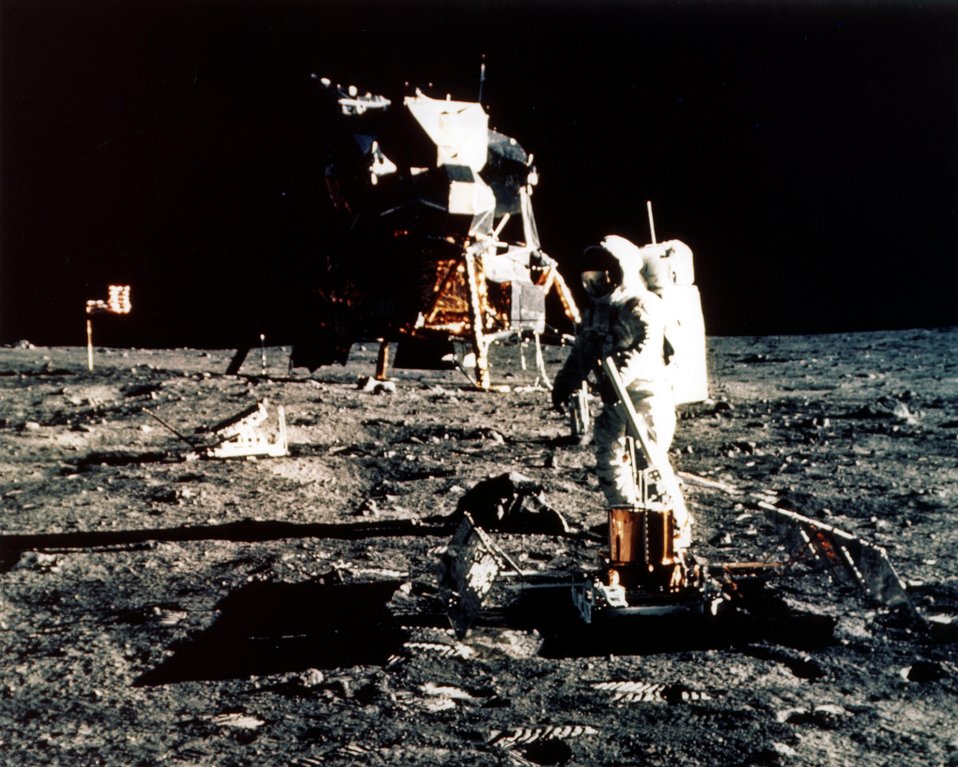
The development of the early Apollo Scientific Experiments Package is photographed by Astronaut Neil A. Armstrong during the Apollo II Eva.